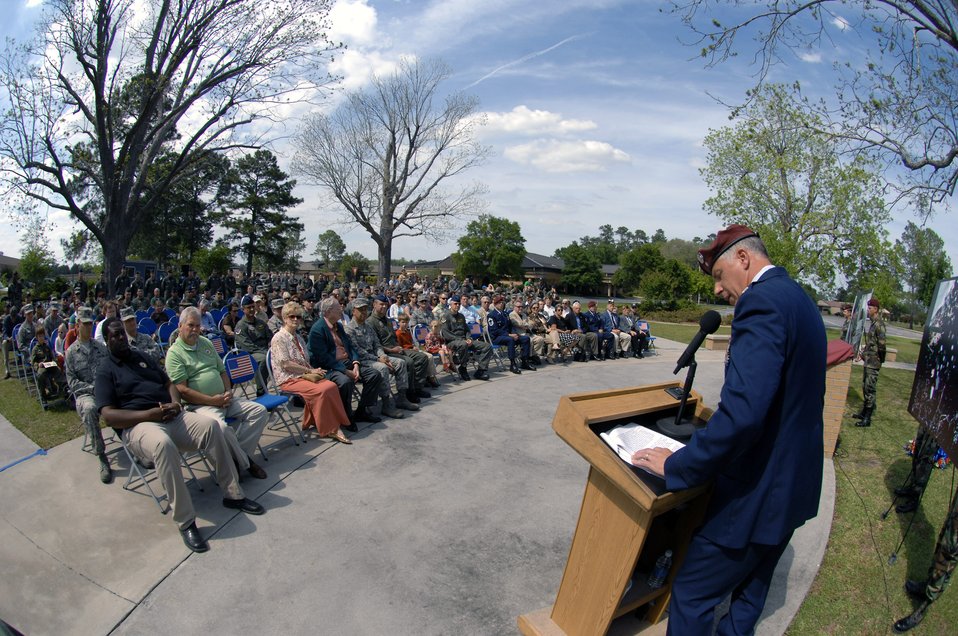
Pitsenbarger re-honored at Moody after 42 years

Lt. Col. Charles Metrolis speaks during a memorial re-dedication ceremony for Airman 1st Class William Pitsenbarger at Moody Air Force Base, Ga., April 18. Airman Pitsenbarger was posthumously awarded the Air Force Cross and later the Medal of Honor for his actions during a rescue operation April 11, 1966. Colonel Metrolis is the 38th Rescue Squadron commander,